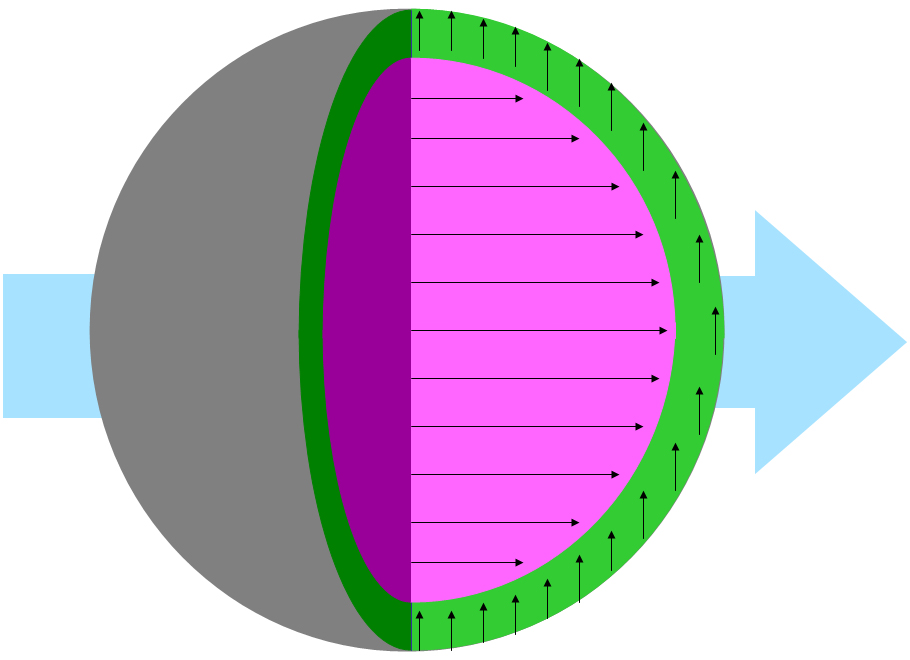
Nanoparticles

Schematic of a spherical magnetite nanoparticle shows the unexpected variation in magnetic moment between the particle's interior and exterior when subjected to a strong magnetic field. The core's moment (black lines in magenta region) lines up with the field's (light blue arrow), while the exterior's moment (black arrows in green region) forms at right angles to it.